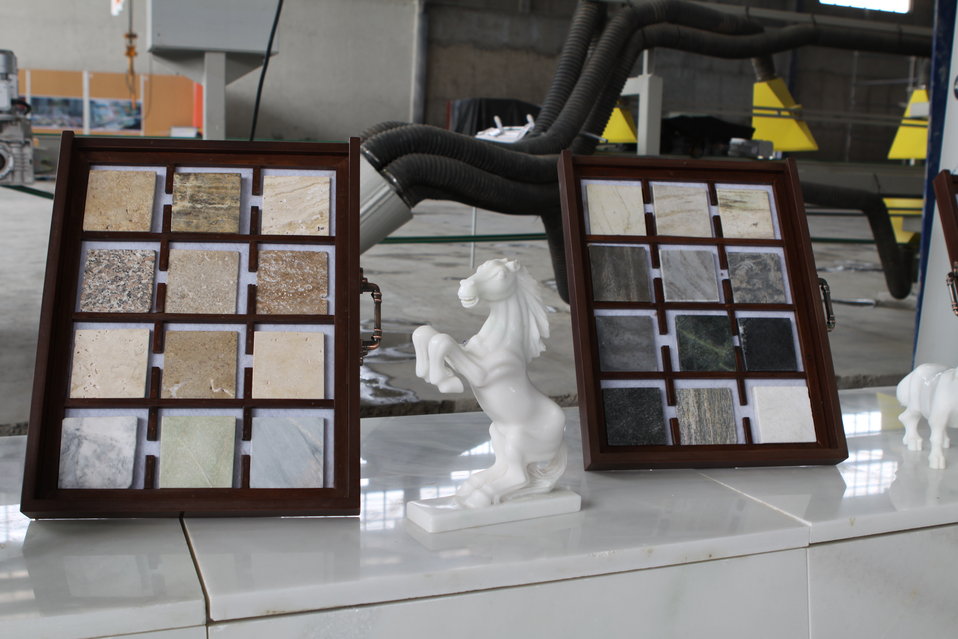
100525 Hirat Marble Conference 285